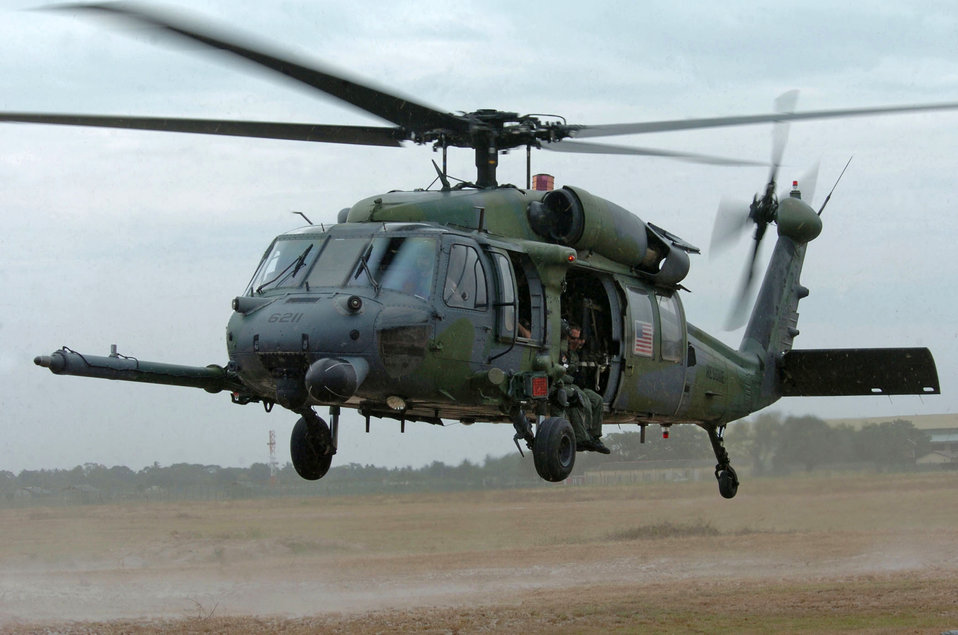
Support in Sri Lanka

COLOMBO, Sri Lanka -- An HH-60G Pave Hawk helicopter takes off to bring an assessment team to Katunayake Air Base, Sri Lanka, during a mission supporting Operation Unified Assistance. Airmen deployed from the 33rd Rescue Squadron at Kadena Air Base, Japan, are helping deliver relief supplies and equipment to various locations in the region.